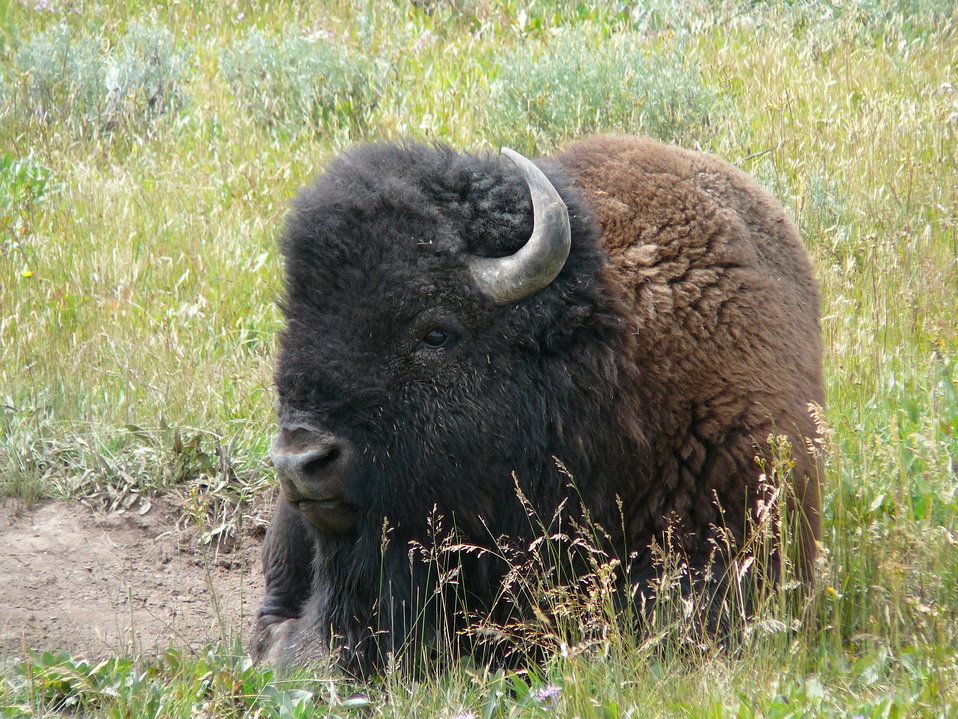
Yellowstone Bison

Bull bison at Yellowstone National Park.

Credit: Judson Spicer / USFWS

Photo Contest Entry #154